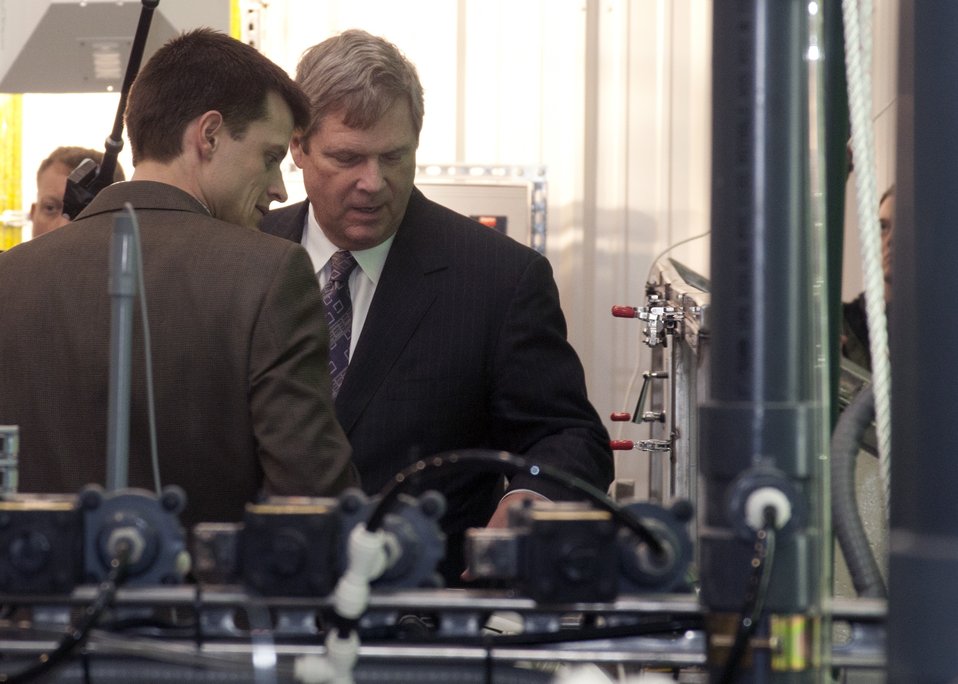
U.S. Department of Agriculture (USDA) Secretary Tom Vilsack toured BioProcess Algae facility at Green Plains Renewable Energy (GPRE), Inc. and unveiled the Phase II key component - commercial scale photo bioreactors/harvesters; after which he talked with company leadership, biologists, and engineers; guests and news media during the grand opening ceremony on April 15, 2011 in Shenandoah, IA. The operation is co-located within an GPRE???s ethanol factory and where BioProcess Algae technology is used to waste products; carbon dioxide, recycled heat and water to mass-produce algae. Algae from this facility are used for animal feeds; pharmaceutical and beauty products.